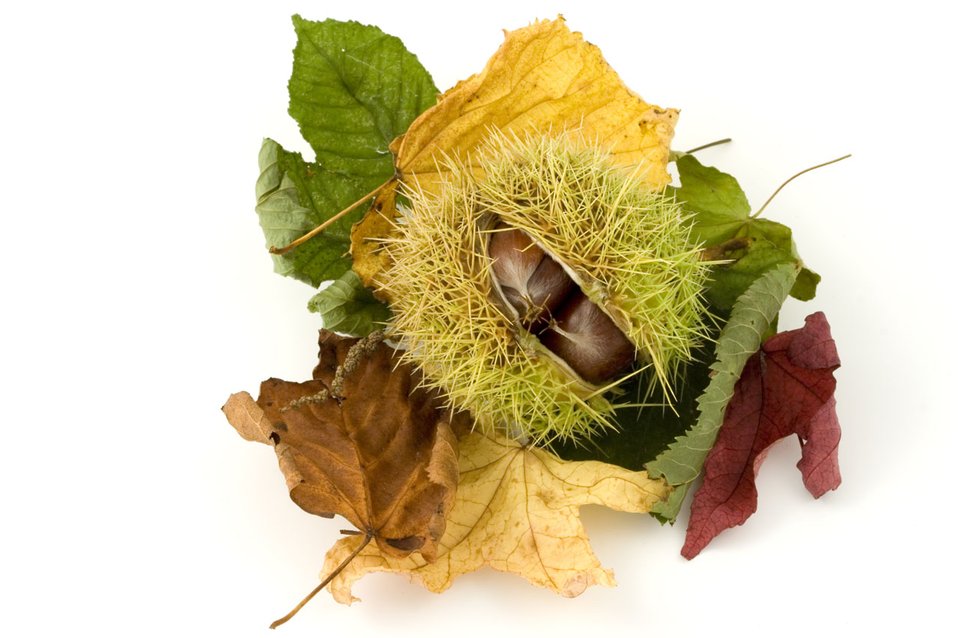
Sweet conker with leaves.